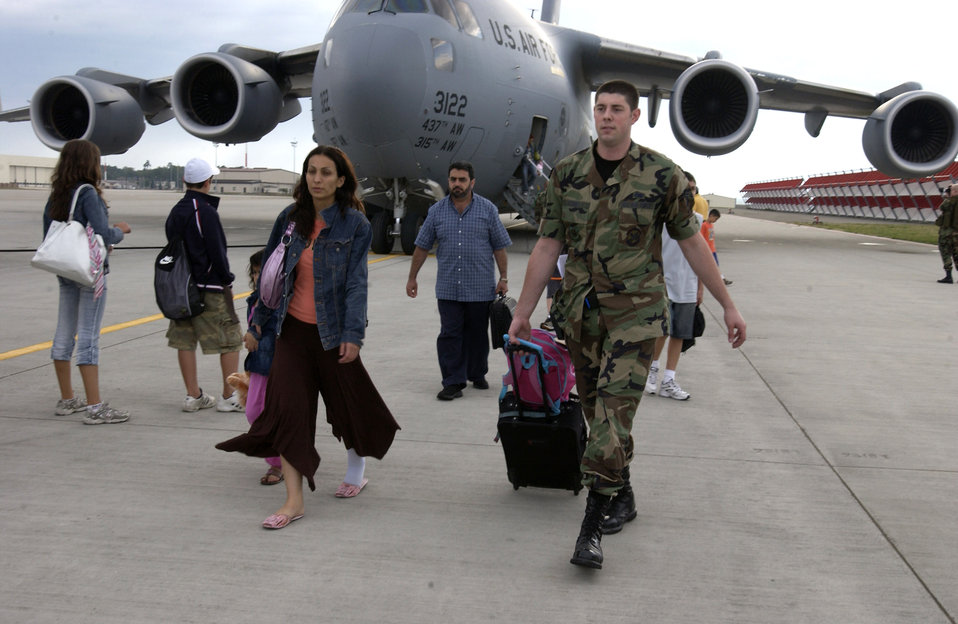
Heading to America

Senior Airman Benjamin Schmidt assists an American citizen with her luggage at Ramstein Air Base, Germany, on July 23. Ramstein Airmen provided humanitarian assistance for Americans departing the Lebanon crisis on their way to the United States. Airman Schmidt is with the 723rd Air Mobility Squadron.